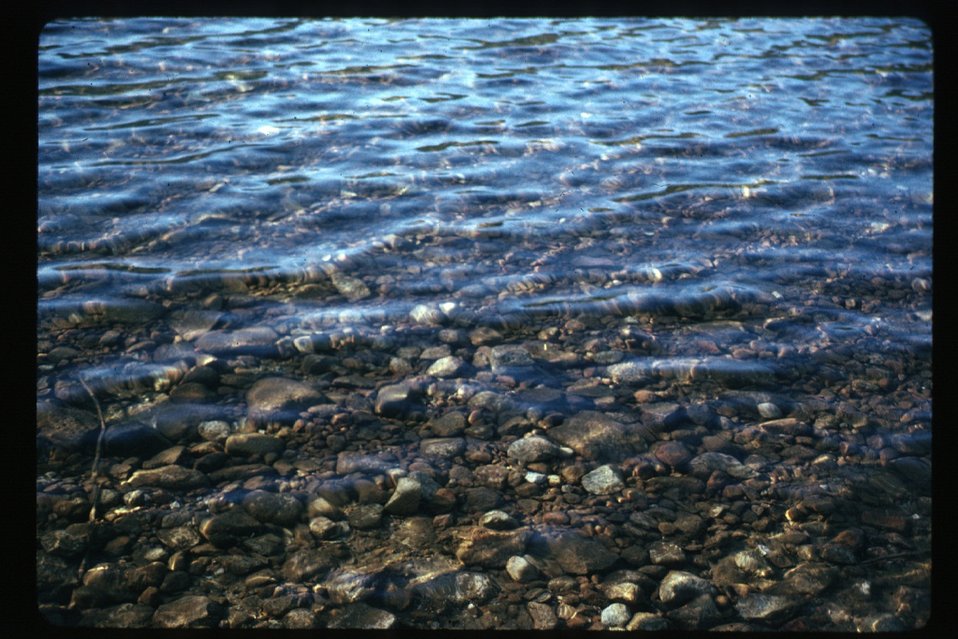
Lower Salmon River Cottonwood Field Office UCSC Upper Columbia Salmon Clearwater District